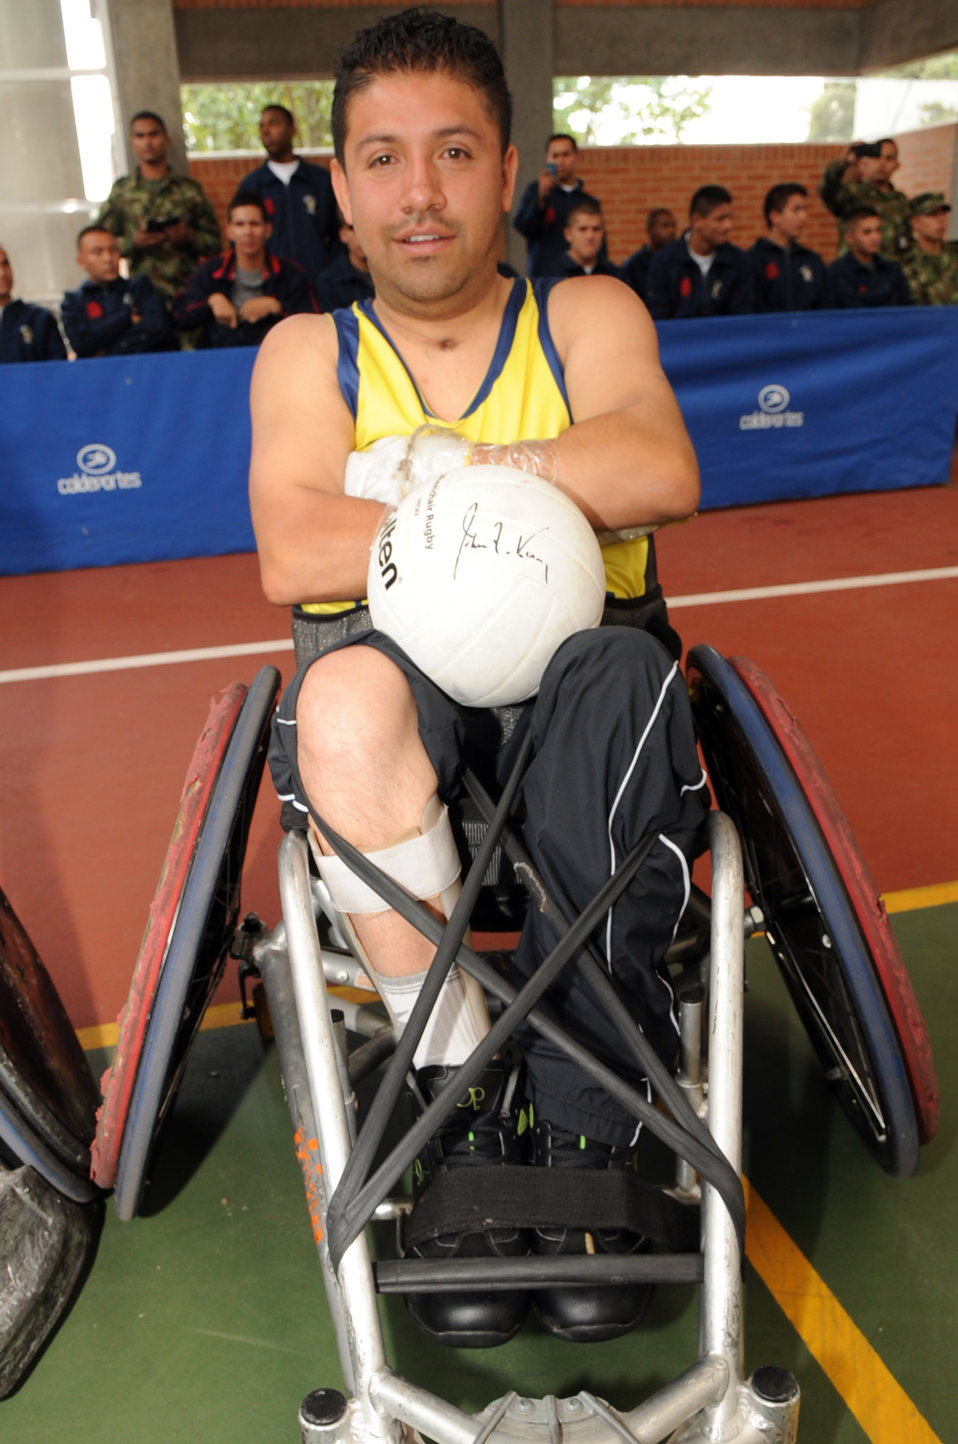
Colombian Wheelchair Rugby Player Shows Autographed Ball

A member of the Colombian national wheelchair rugby team displays a ball autographed by U.S. Secretary of State John Kerry during his visit to the Coldeportes center in Bogota, Colombia, on August 12, 2013.